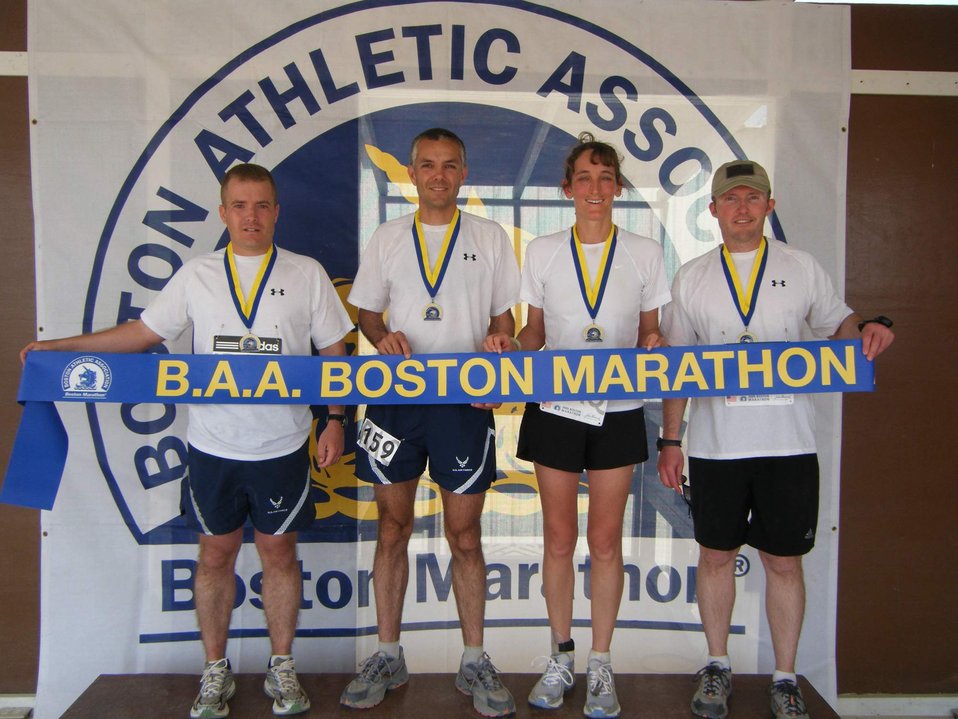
Runners participate in Boston Marathon-Iraq

Capt. Ciro De la Vega (from left), Maj. Harland Peelle and Army Majs. Deydre Teyhen and Michael Whitescarver gather after running the Boston Marathon-Iraq April 18 at Contingency Operating Base Adder. Major Peelle was the first man to cross the finish line and Major Teyhen was the first woman to finish.